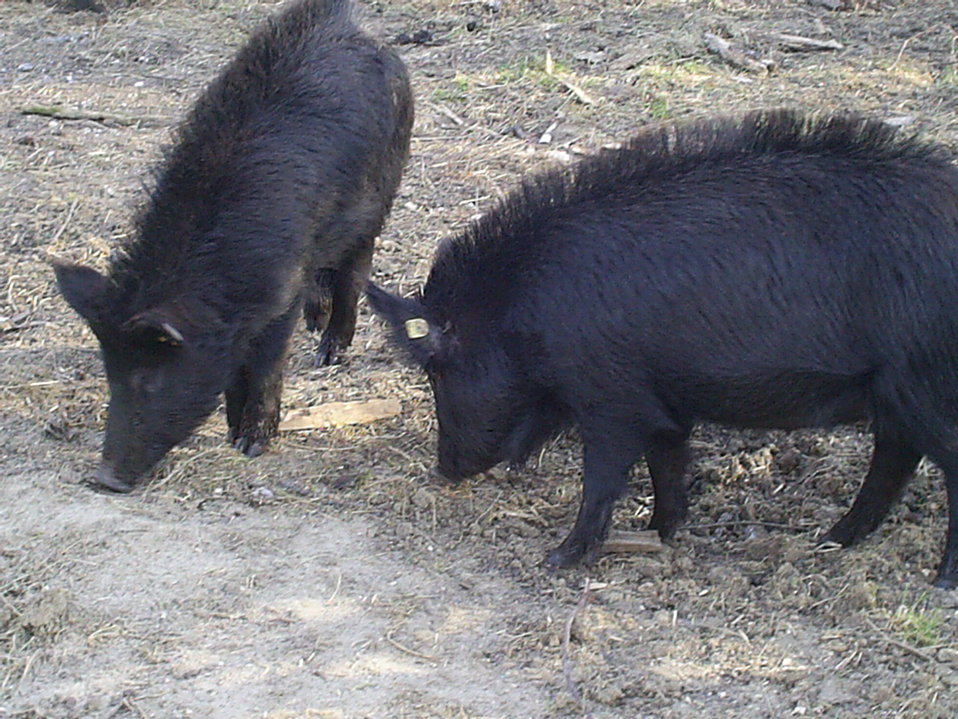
Български: Източно-балканска свиня